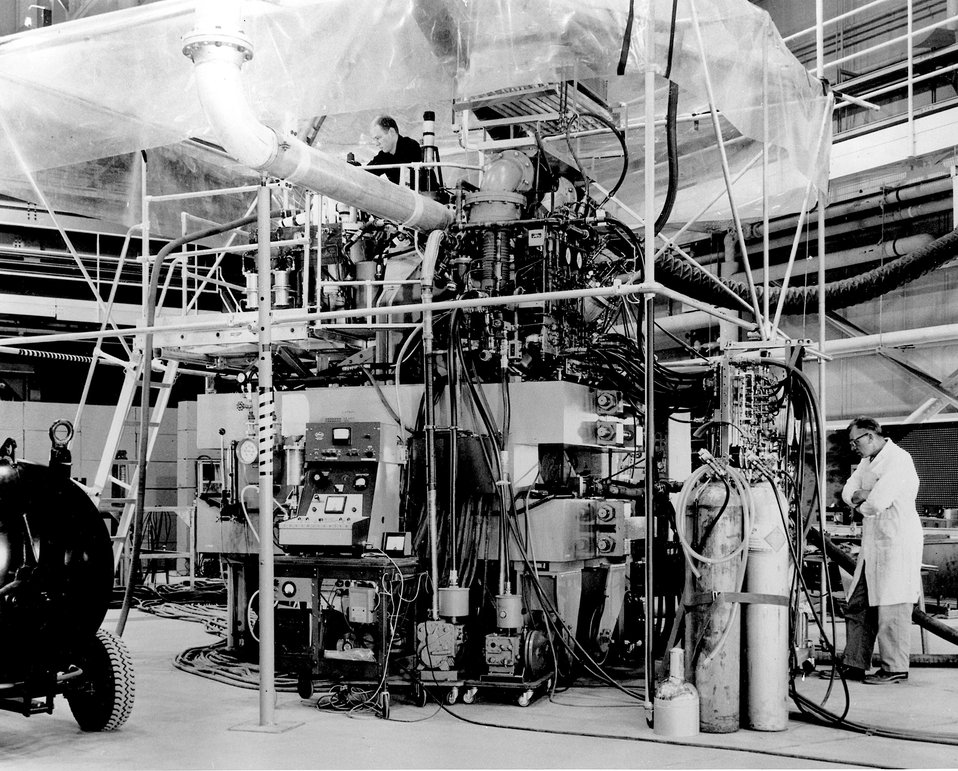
The Brookhaven 20-inch bubble chamber, installed in the Cosmotron experimental area. In the chamber, liquid hydrogen is super heated by a sudden reduction in pressure, which is timed to coincide with the moment when pulsed particles from the Cosmotron enter. c. 1960